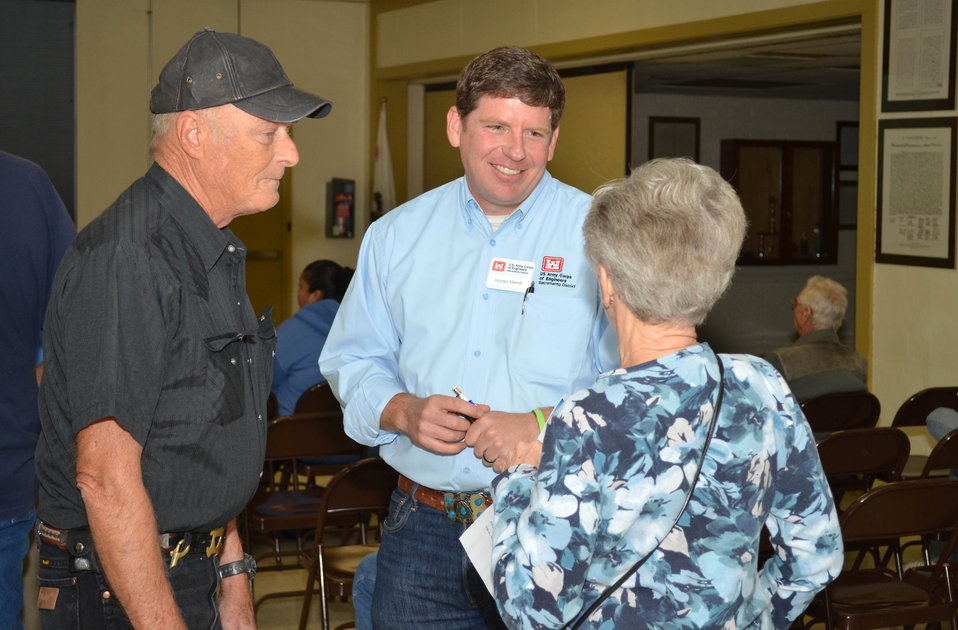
Corps talks recreation with Isabella Lake Dam communities

Hunter Merritt (center), a recreation planner for the U.S. Army Corps of Engineers Sacramento District, talks with local residents after a public meeting in Lake Isabella, Calif., Sept. 26, 2013. Residents and business operators were asked to provide input about how to best reduce recreation impacts during construction of the Isabella Lake Dam Safety Modification Project. Comments will be used to help shape a draft recreation plan outlining the Corps’ plan to mitigate for the temporary loss of recreation features around the dam during construction. The draft recreation plan is scheduled for release in December 2013.